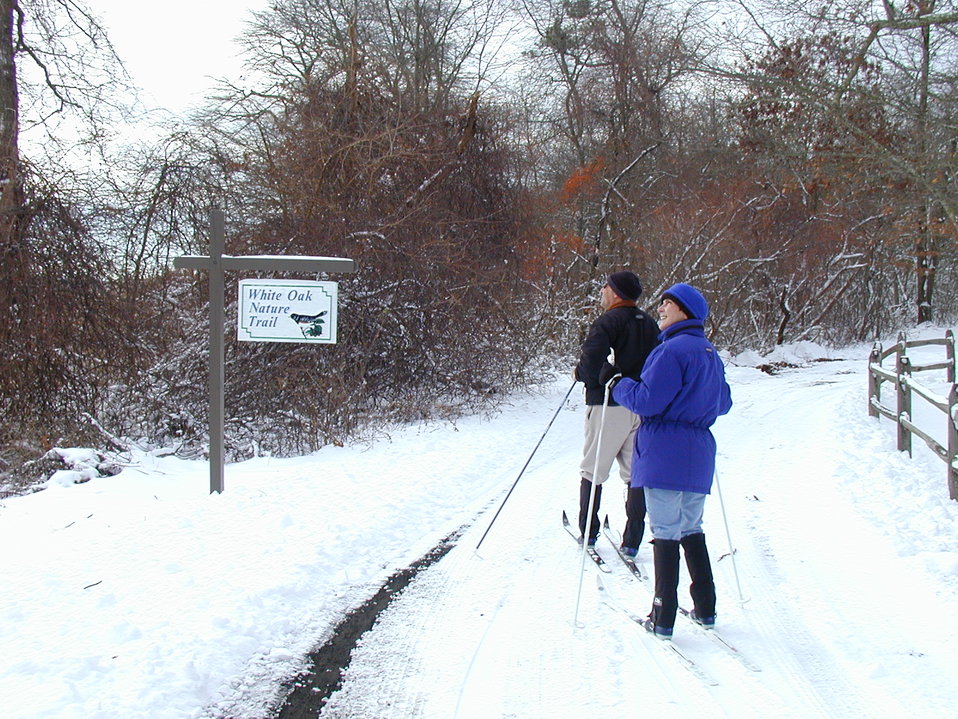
Skiers

Wertheim National Wildlife Refuge, NY